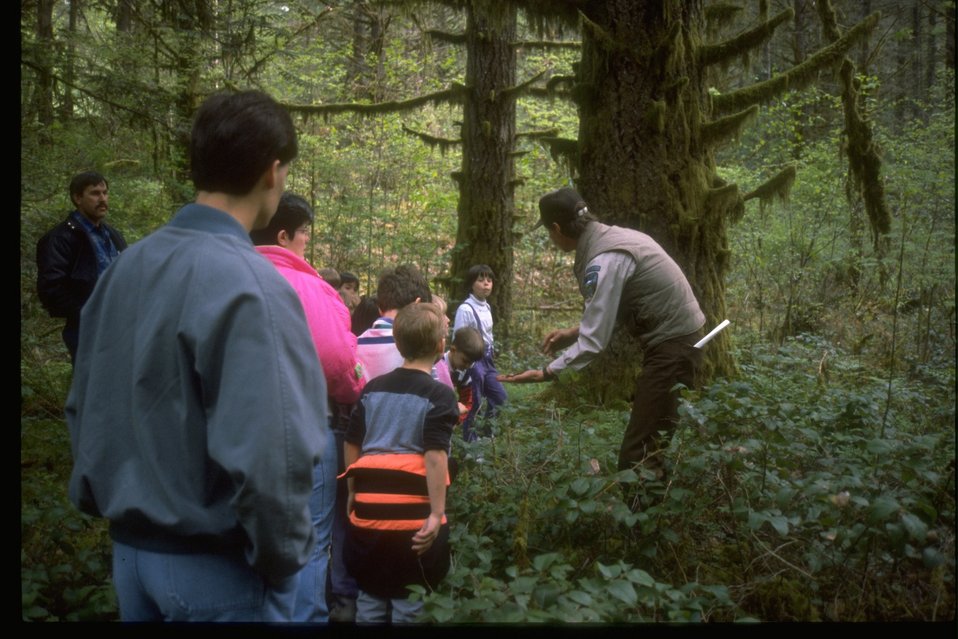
Presentation to Kids.